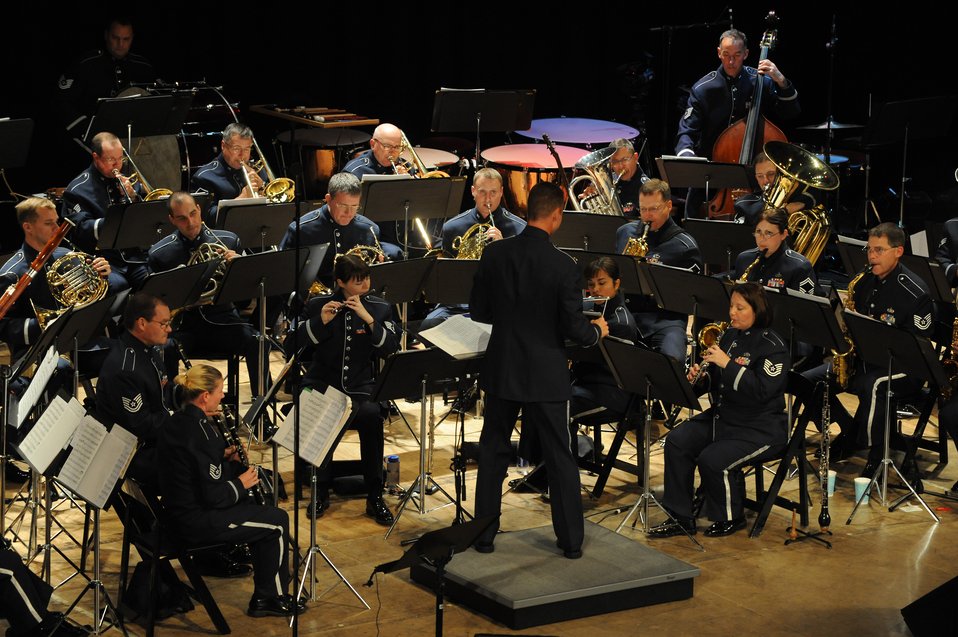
Air Force Week Los Angeles

Members of the Band of the Golden West perform at the Warner Grand Theatre, San Pedro, Calif., Nov. 16. The band is performing during Air Force Week Los Angeles, an event designed to educate the local population about the Air Force's capabilities and missions through various activities and exhibitions in the Los Angeles area. It provides an up close and personal look at the men and women of the Air Force serving worldwide in the defense of freedom. Air Force Week Los Angeles runs Nov. 14-21.